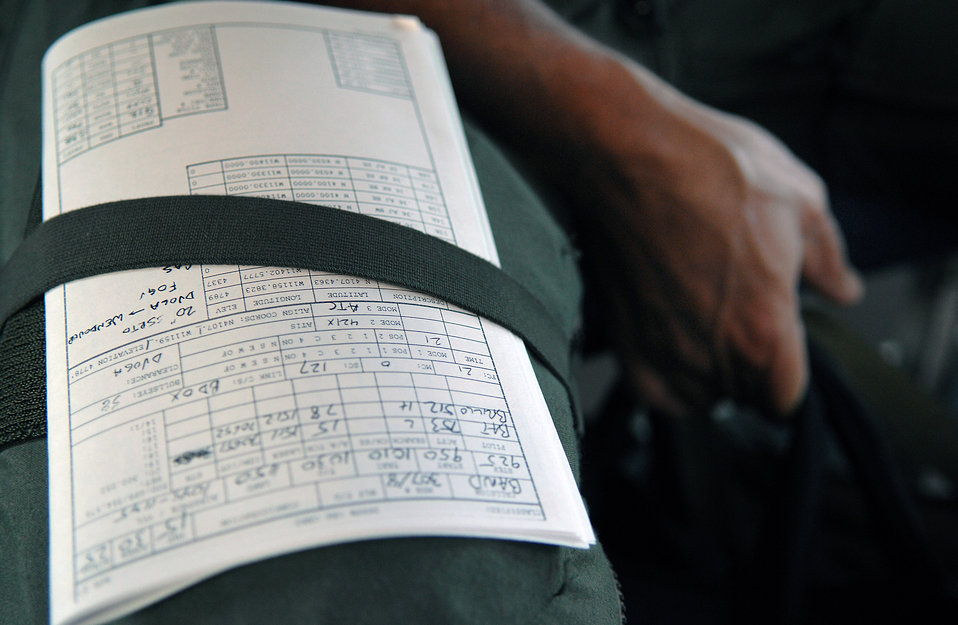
Hill fighter squadron excels with Total Force Integration mission

A mission data card is strapped on the leg of Lt. Col. Mike Brill on his way out to fly an F-16 Fighting Falcon Oct. 10 at Hill Air Force Base, Utah, contains steer point coordinates and other data for the flight. Colonel Brill is a reservist with the 466th Fighter Squadron.